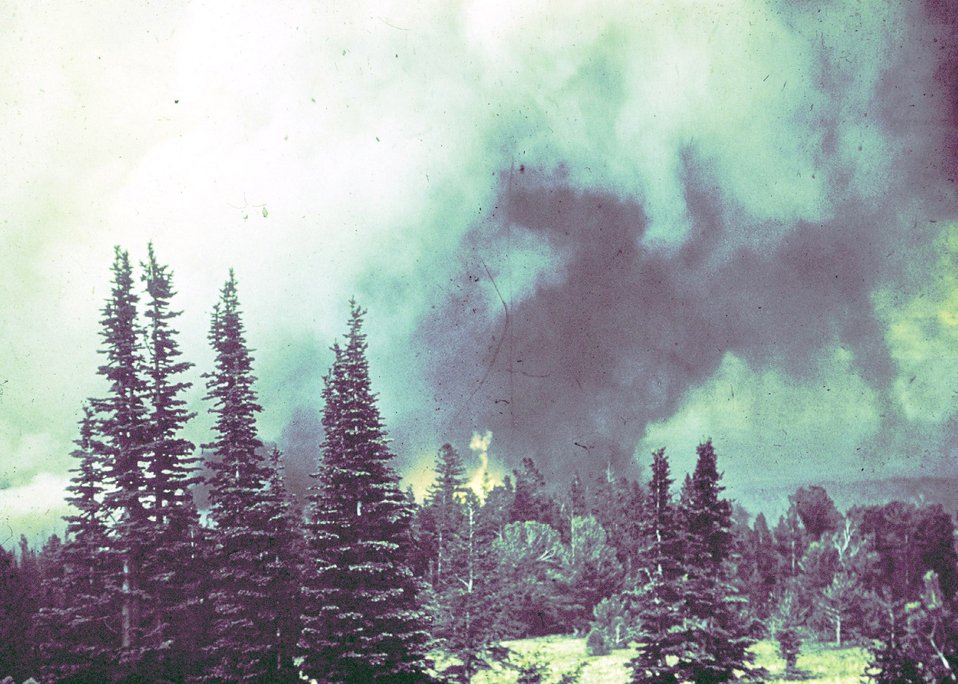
Wildfire in Yellowstone National Park, Wyoming in 1988.